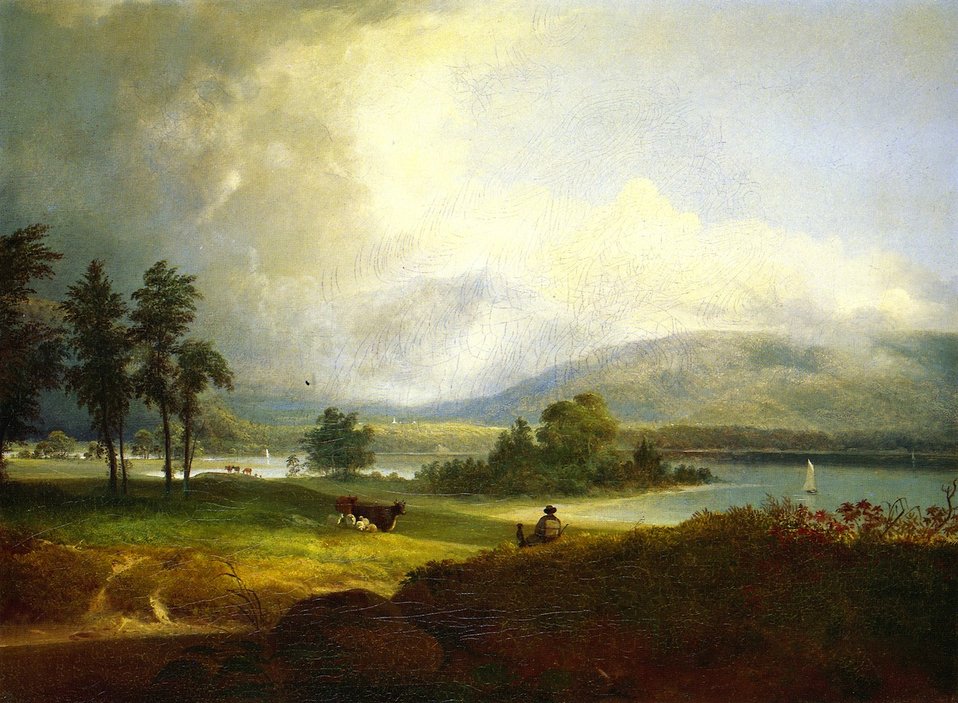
Alvan Fisher - Hudson River near West Point